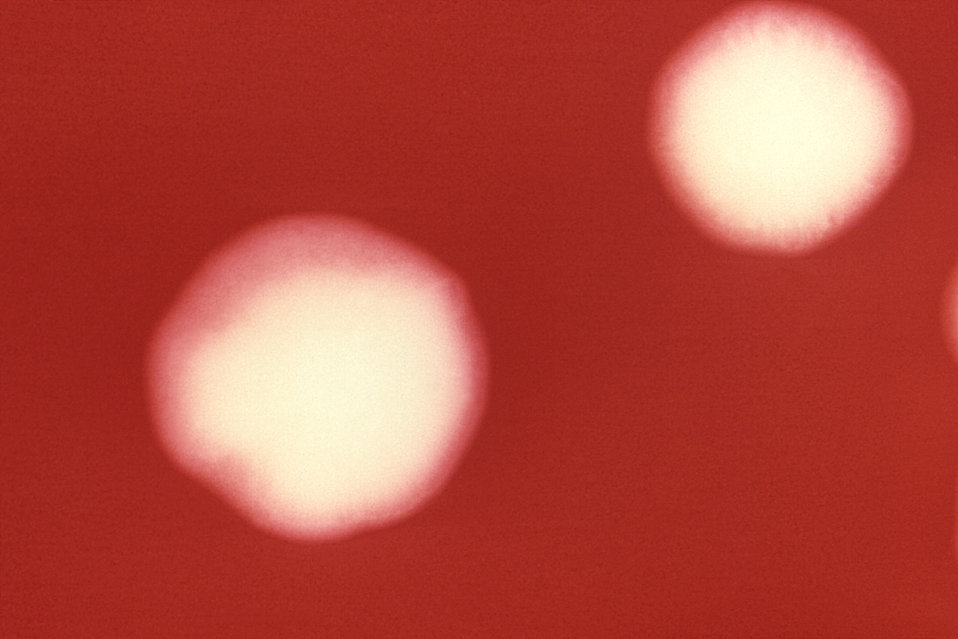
This 1972 photograph revealed the morphology displayed by two colonies of Bacteroides fragilis subsp. ovatus that had been grown on blood agar medium for 48 hours.